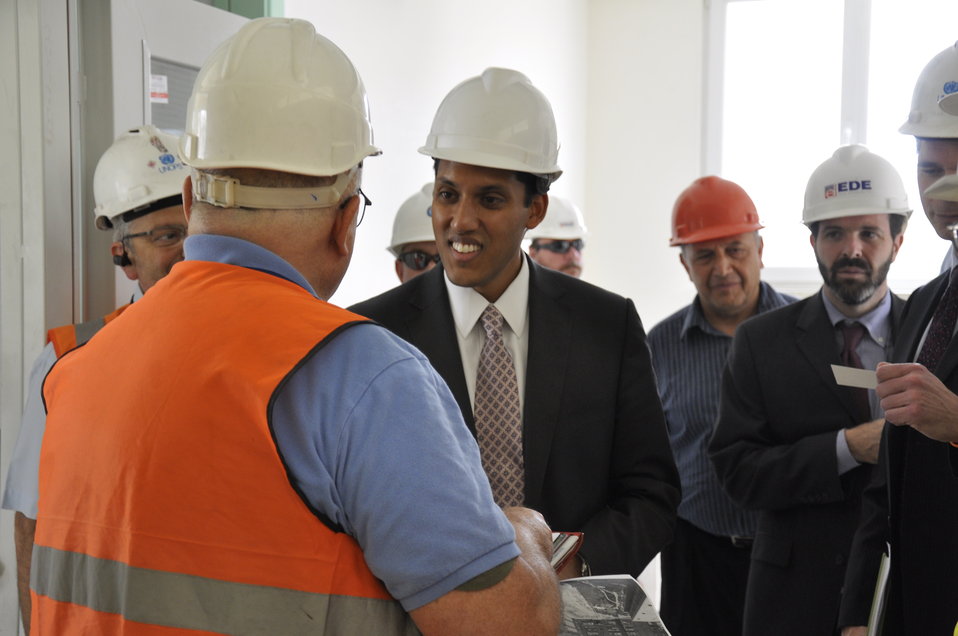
Ghazni High School in Kabul